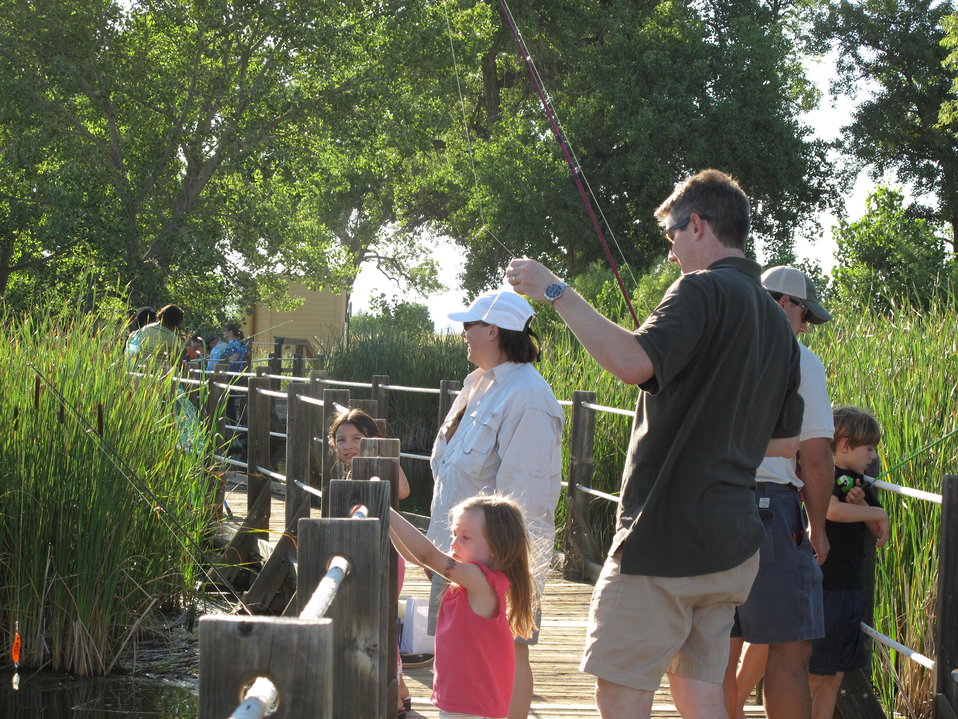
Families Fishing